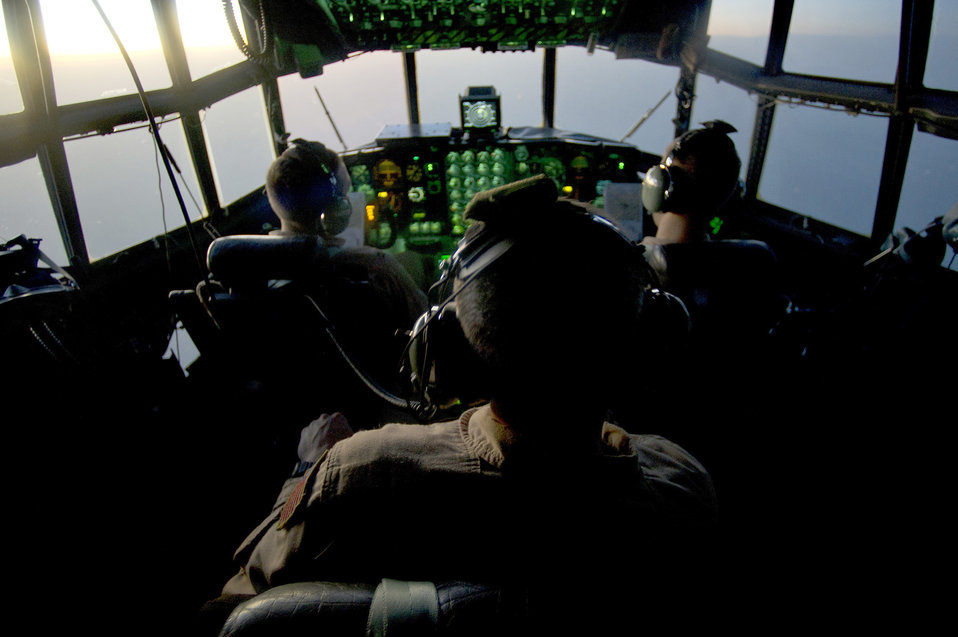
C-130 Aircrew

Members of a 746th Expeditionary Airlift Squadron aircrew fly a C-130 Hercules during an air transport mission in support of Operation New Dawn. The aircrew members are deployed from Niagara Falls, N.Y.